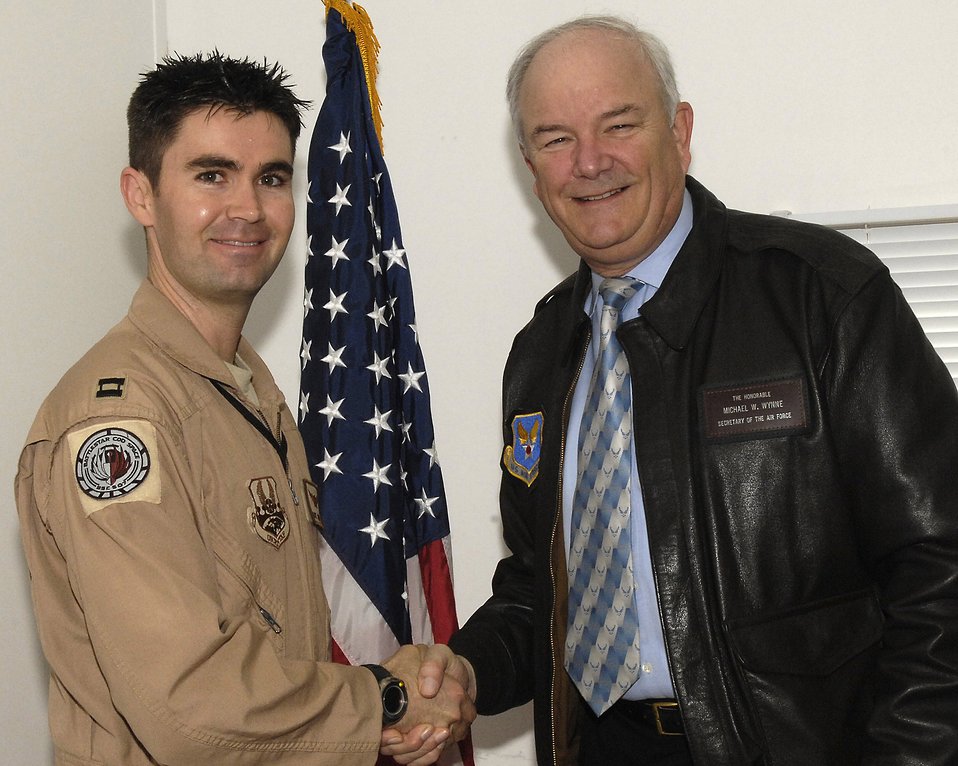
Operation Enduring Freedom

Capt. David Anderson was honored by Secretary of the Air Force Michael W. Wynne Feb. 5. at the Combined Air and Space Operations Center in Southwest Asia with a personal coin.